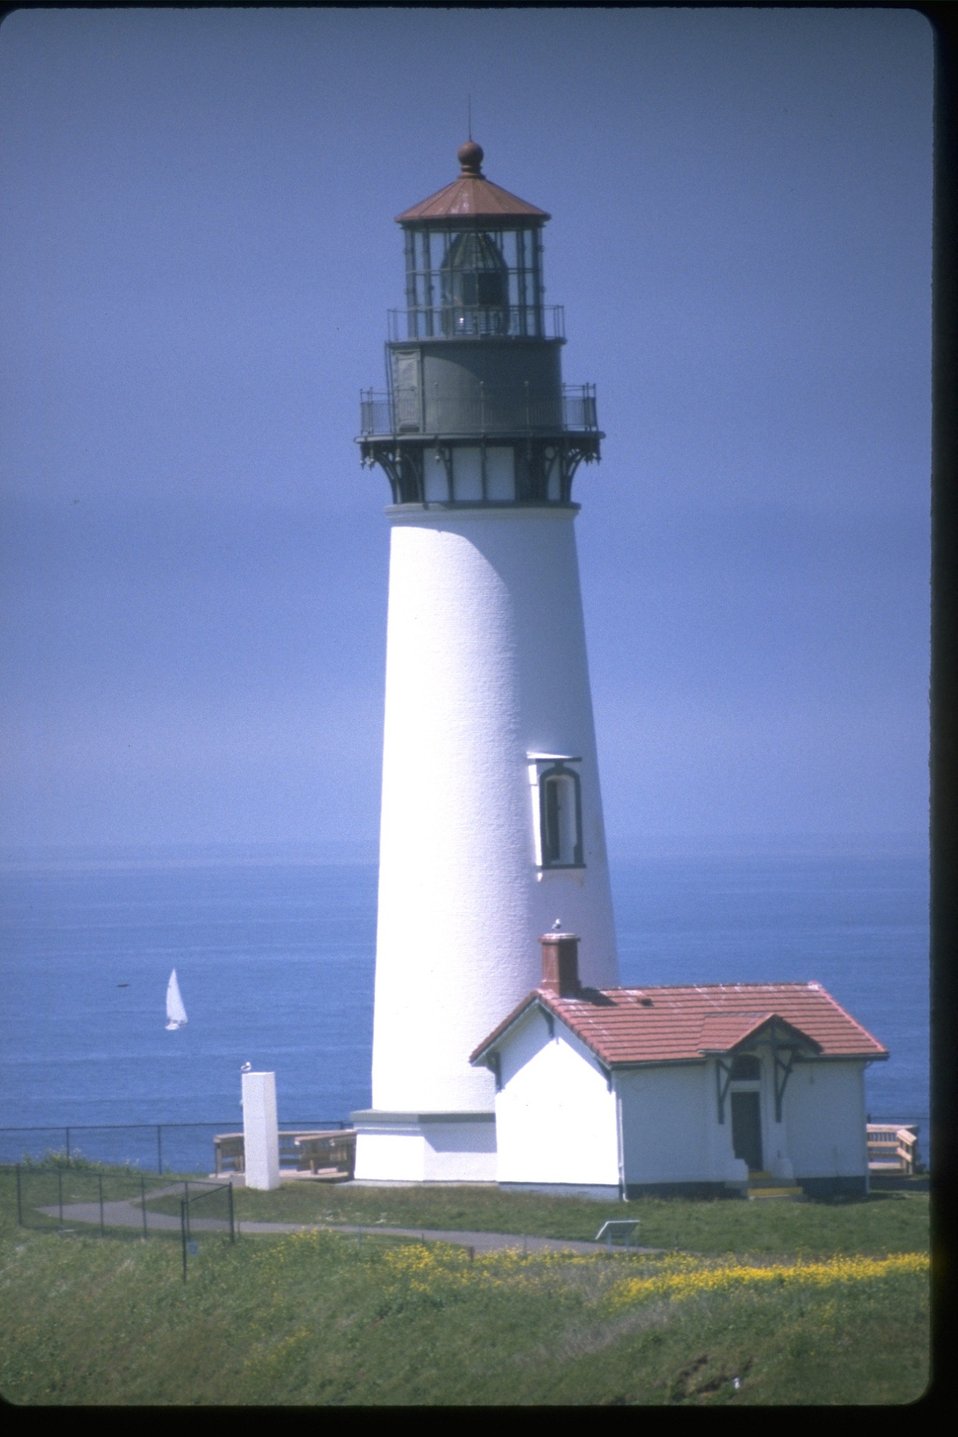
Vertical shot of Yaquina Head lighthouse with a sailboat off shore.